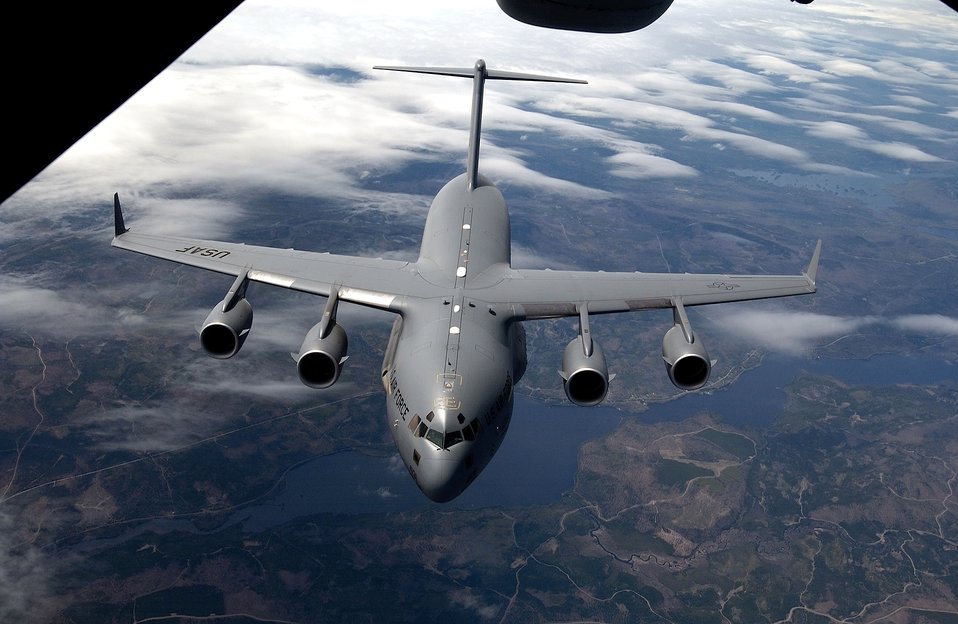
April 16 airpower summary: C-17s provide intra-theater airlift

The C-17 Globemaster III provides intra-theater heavy-airlift support for coalition forces in Afghanistan and Iraq.